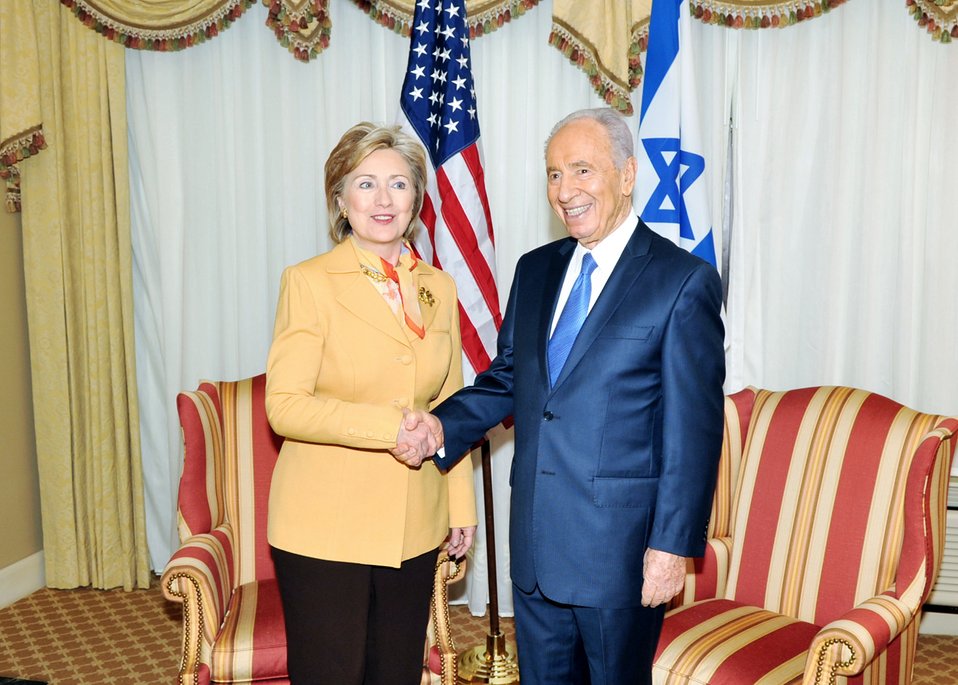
Secretary Clinton Meets With Israeli President

U.S. Secretary of State Hillary Rodham Clinton attends a bilateral meeting with President Shimon Perez of Israel at the Omni Shoreham Hotel in Washington, DC May 5, 2009.